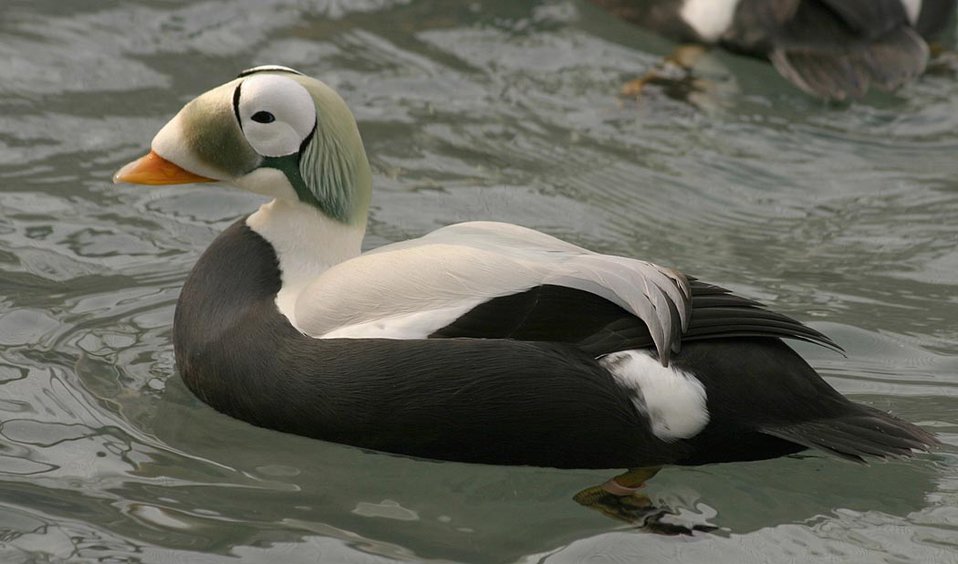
Threatened spectacled eider male (Somateria fischeri), Alaska SeaLife Center, Seward, Alaska